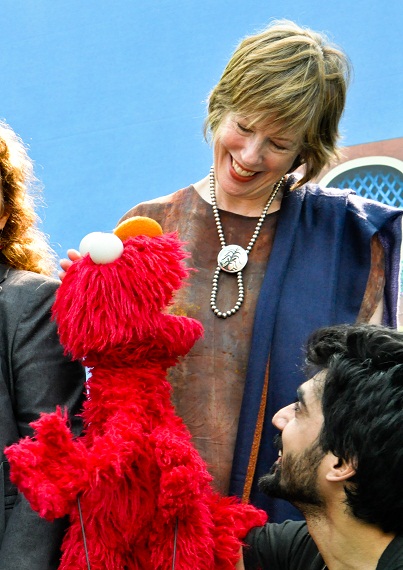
Pakistan Children Television (PCTV)

Lahore, October 5, 2011: Dr. Marilyn Wyatt, wife of U.S. Ambassador looks at a puppet of a new USAID-sponsored Pakistani children’s TV show Sim Sim Hamara that will be launched later this year.

Sim Sim Hamara is a new Pakistani puppet show that has been designed under the USAID-funded four-year, $20-million Pakistan Children Television (PCTV) Project (puppet-based television programming) for Pakistani children. The show is scheduled to go on air in late December. This take-off on Sesame Street will provide joyful learning opportunities for children in the 4-9 year age group, with a focus on disadvantaged children, especially girls who do not have access to formal schooling. Educational curriculum will focus on language development, critical thinking, and cognitive processes. The program is expected to help alleviate the educational deficits of children without access to schooling and reflect messages of inclusion, mutual respect, and equal opportunity while developing basic literacy and numeracy skills.

In addition to the television show, the USAID-funded project will include: radio programs for parents and other caregivers, live puppet shows, mobile video shows, a website with e-books, games, and children’s songs.